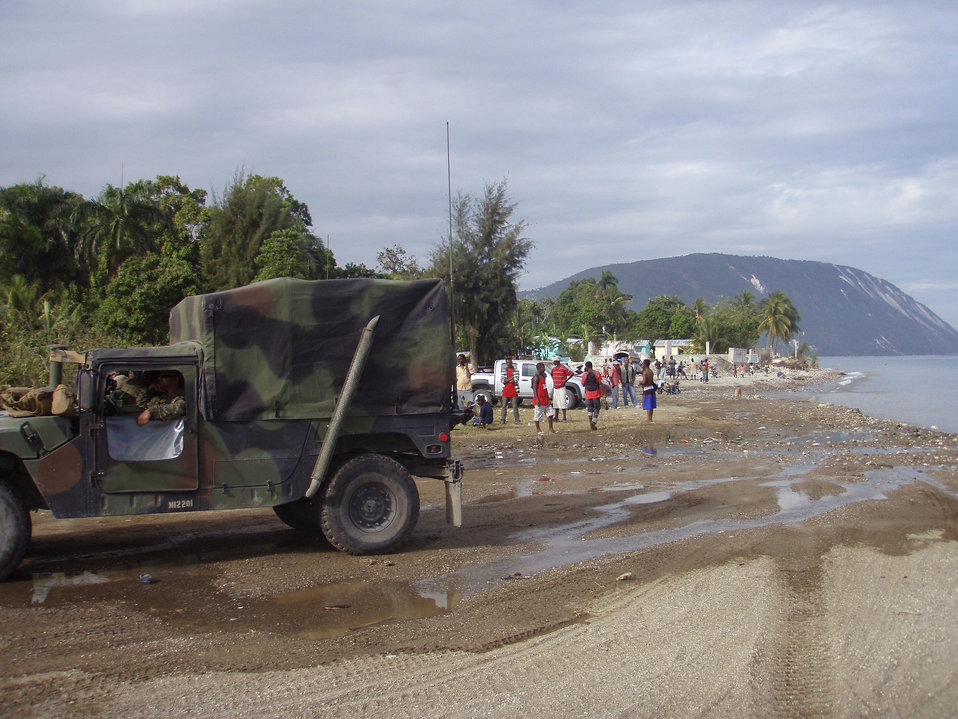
This image depicts a convoy of U.S. Marines who'd been transported by the USS Bataan to Haiti in order to provide security to responders during Operation Unified Response, responding to the Haitian earthquake in January, 2010. In the background you'll see numbers of local Haitian inhabitants affected by this natural disaster.